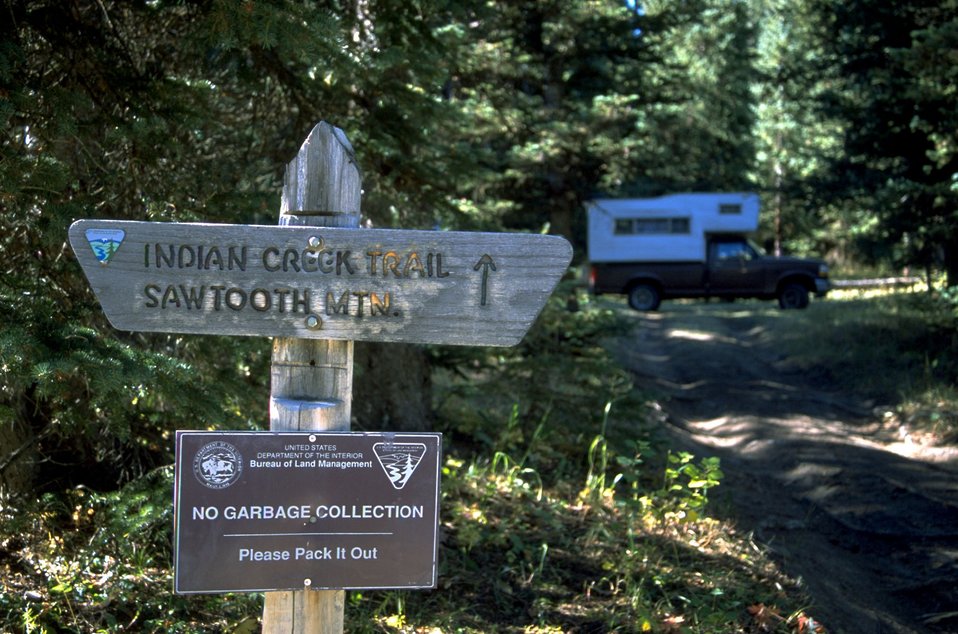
Indian Creek Trail sign - Camper in the background